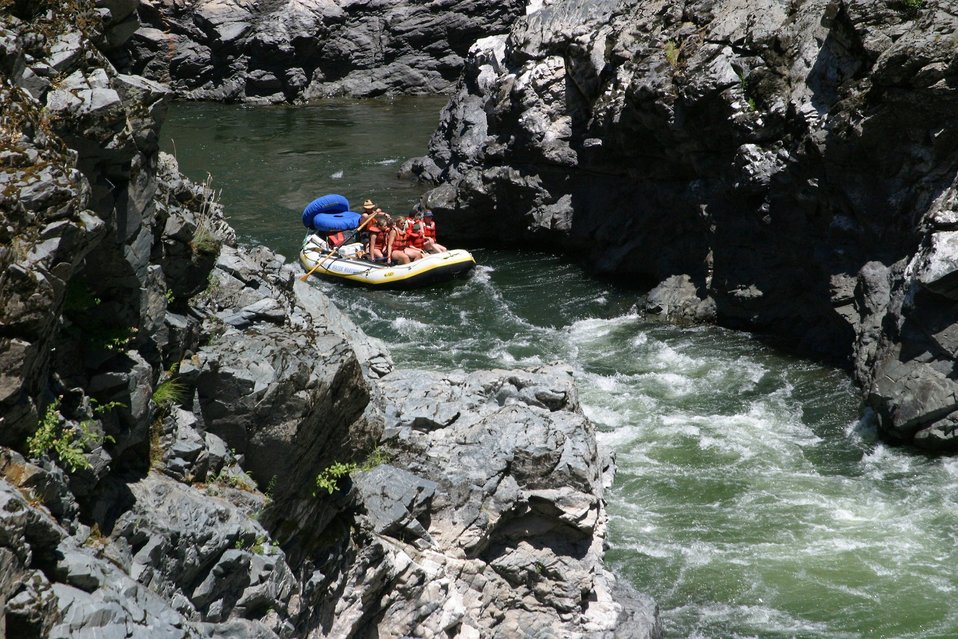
The Coffee Pot